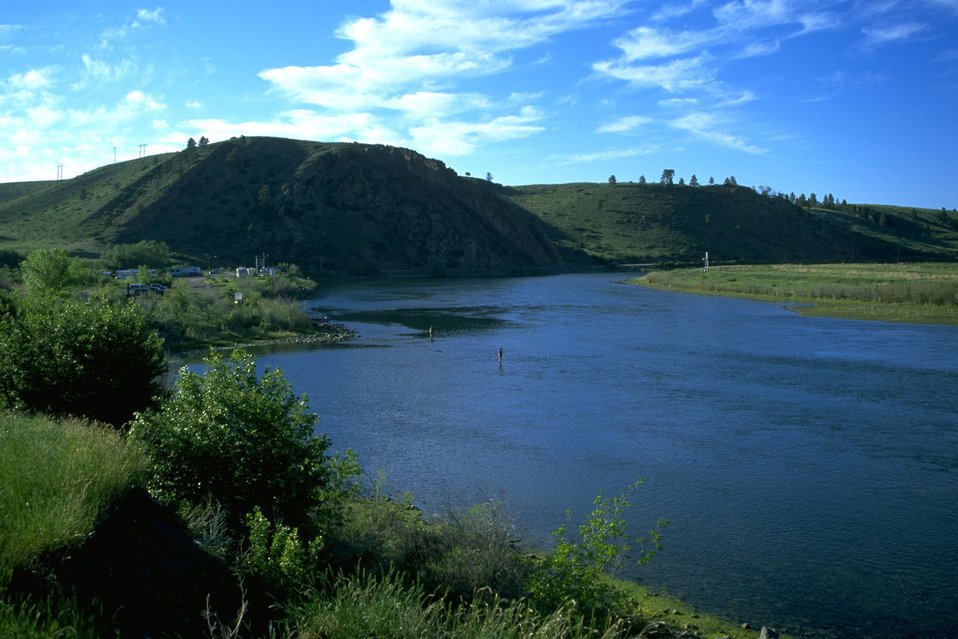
Missouri River